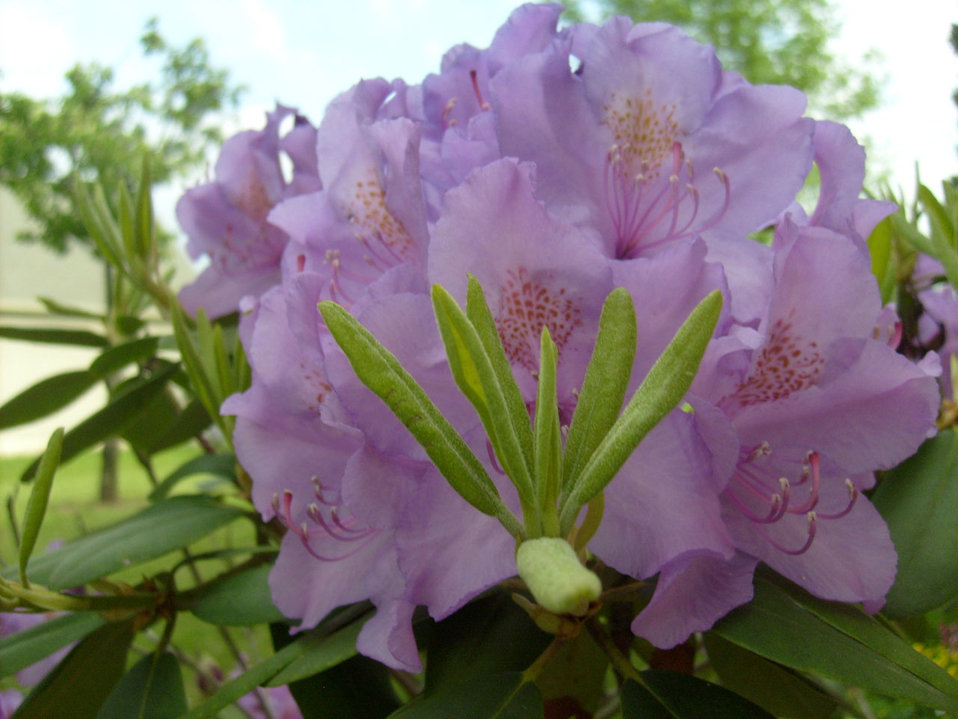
Rhododendrons bloom.